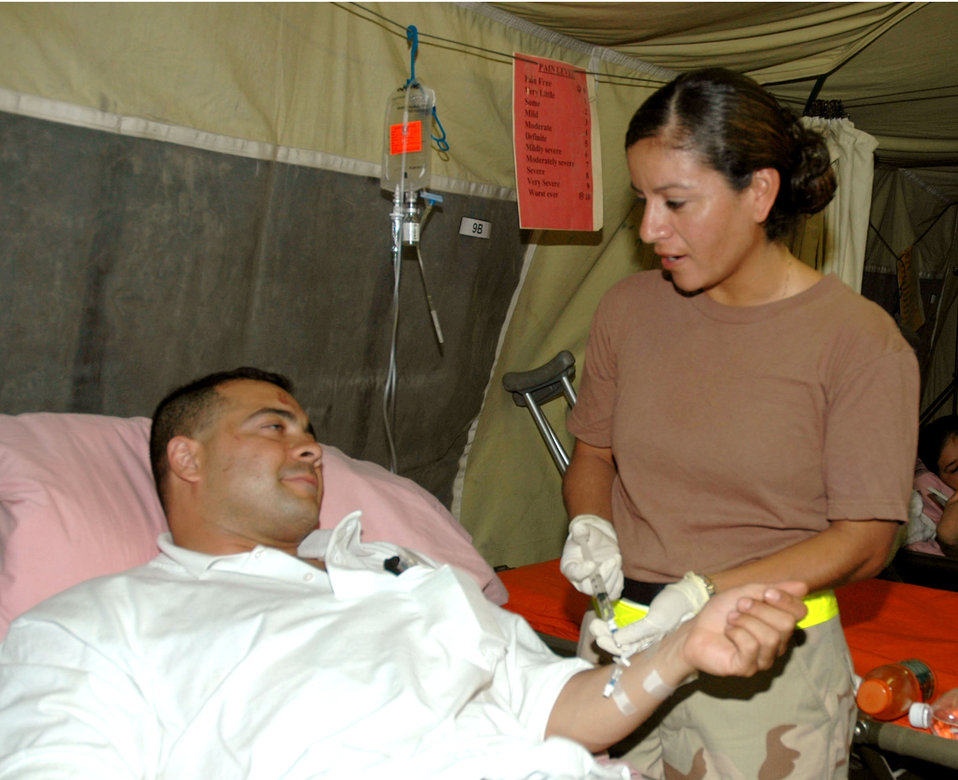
Staging facility takes over where hospital leaves off

BALAD AIR BASE, Iraq -- Second Lt. Maria Sanchez cares for a patient at the 332nd Expeditionary Medical Group's contingency aeromedical staging facility. She and the other doctors, nurses and technicians with the facility strive to ensure their patients are as comfortable as possible before being transported to Germany. Lieutenant Sanchez is deployed from the 81st Medical Surgical Squadron at Keesler Air Force Base, Miss.